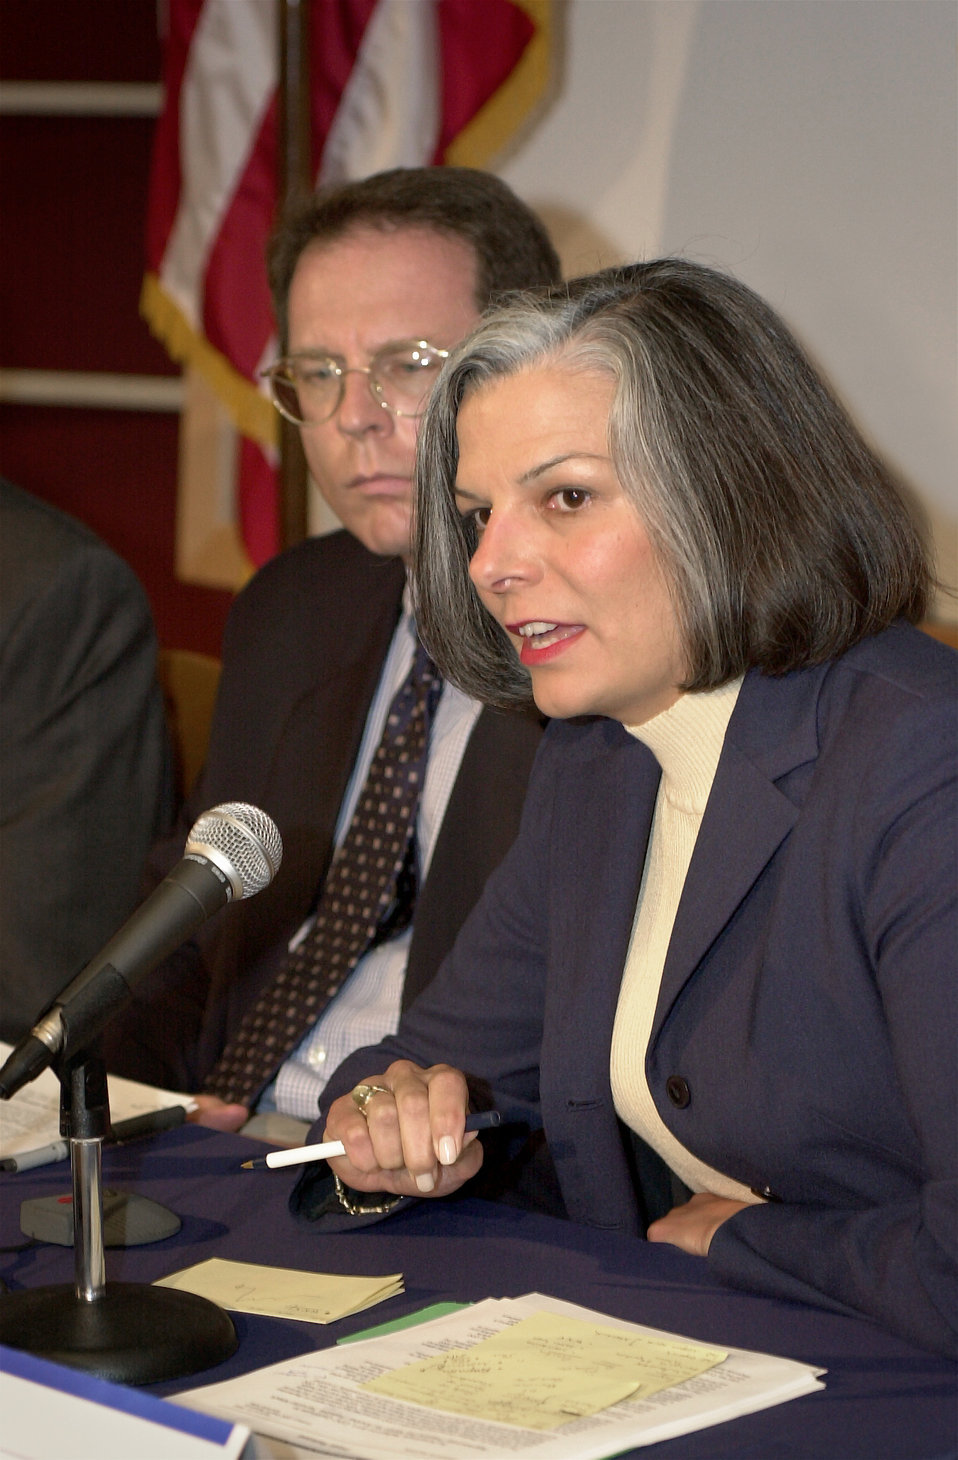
Centers for Disease Control and Prevention Bioterrorism Preparedness Press Briefing, August 27, 2002.